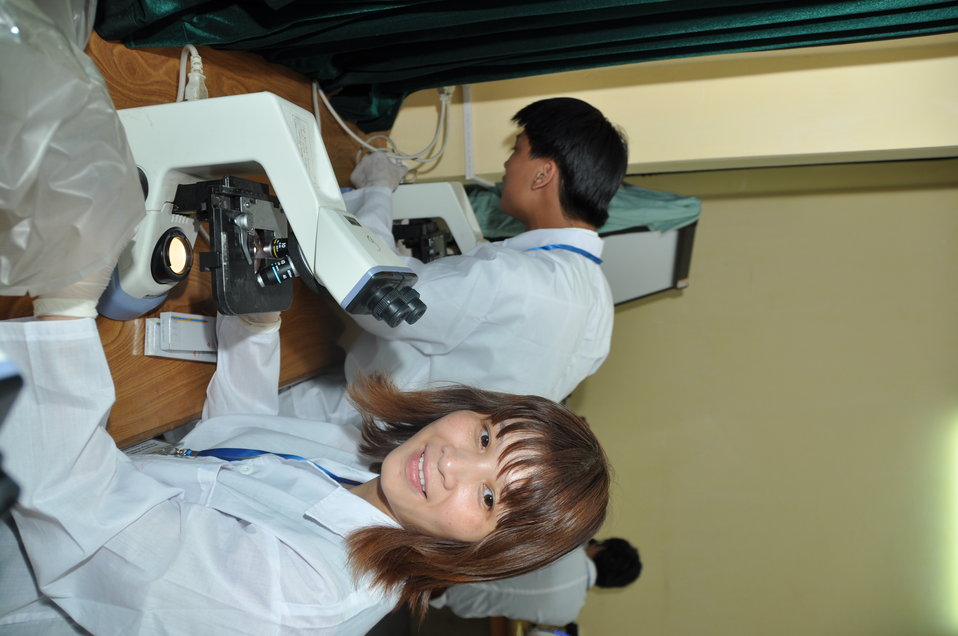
USAID EPT Smithsonian Pathology Training to Detect Emerging Infectious Diseases Wildlife and Other Animals in Vietnam Workshop